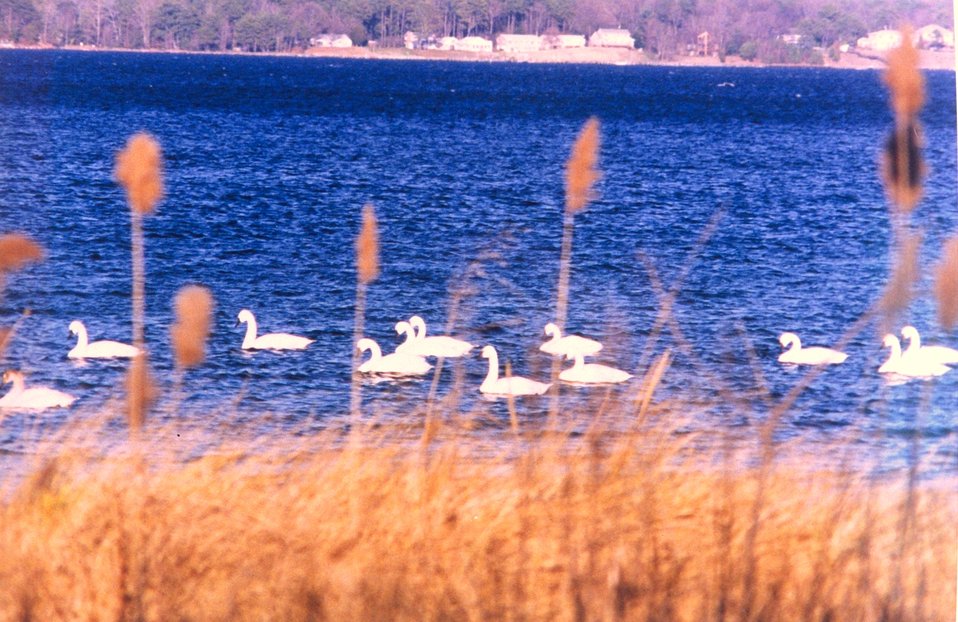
Tundra swans near the mouth of the Patuxent River. These swans can be distinguished from mute swans by their black bills. Tundra swans are native to the Chesapeake Bay region.